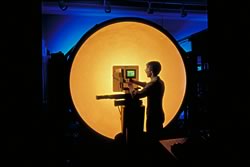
Performance of Video Displays

Measurements of light intensity, color spectra, and other variables provide objective indicators for judging the performance of video displays. NIST physicist George Jones positions a flat-panel television set within a 2-meter-wide hemisphere used in making such measurements.

Robert Rathe Photography